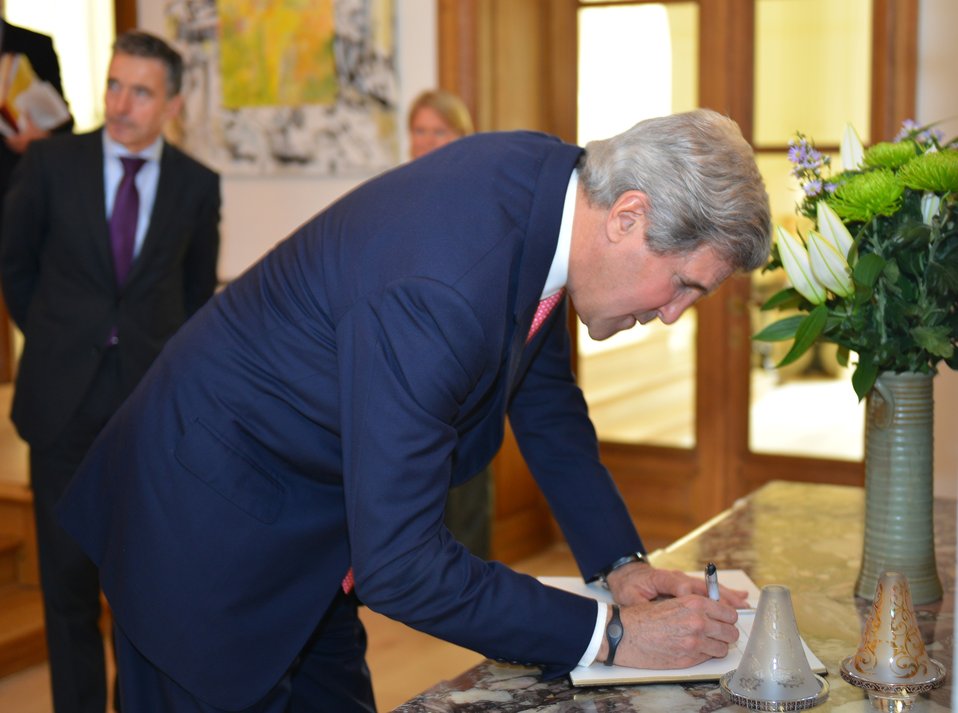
Secretary Kerry Signs the Guestbook at NATO Secretary General Rasmussen's Residence

U.S. Secretary of State John Kerry signs the guestbook at the residence of NATO Secretary General Anders Fogh Rasmussen in Brussels, Belgium, on April 22, 2013.